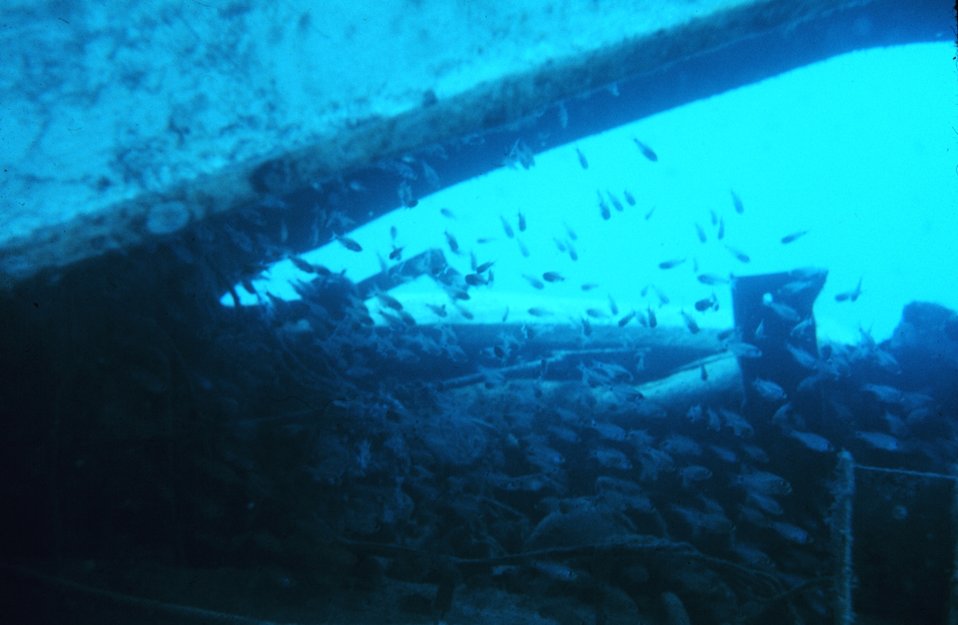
Apogon sp. Cardinal Fish